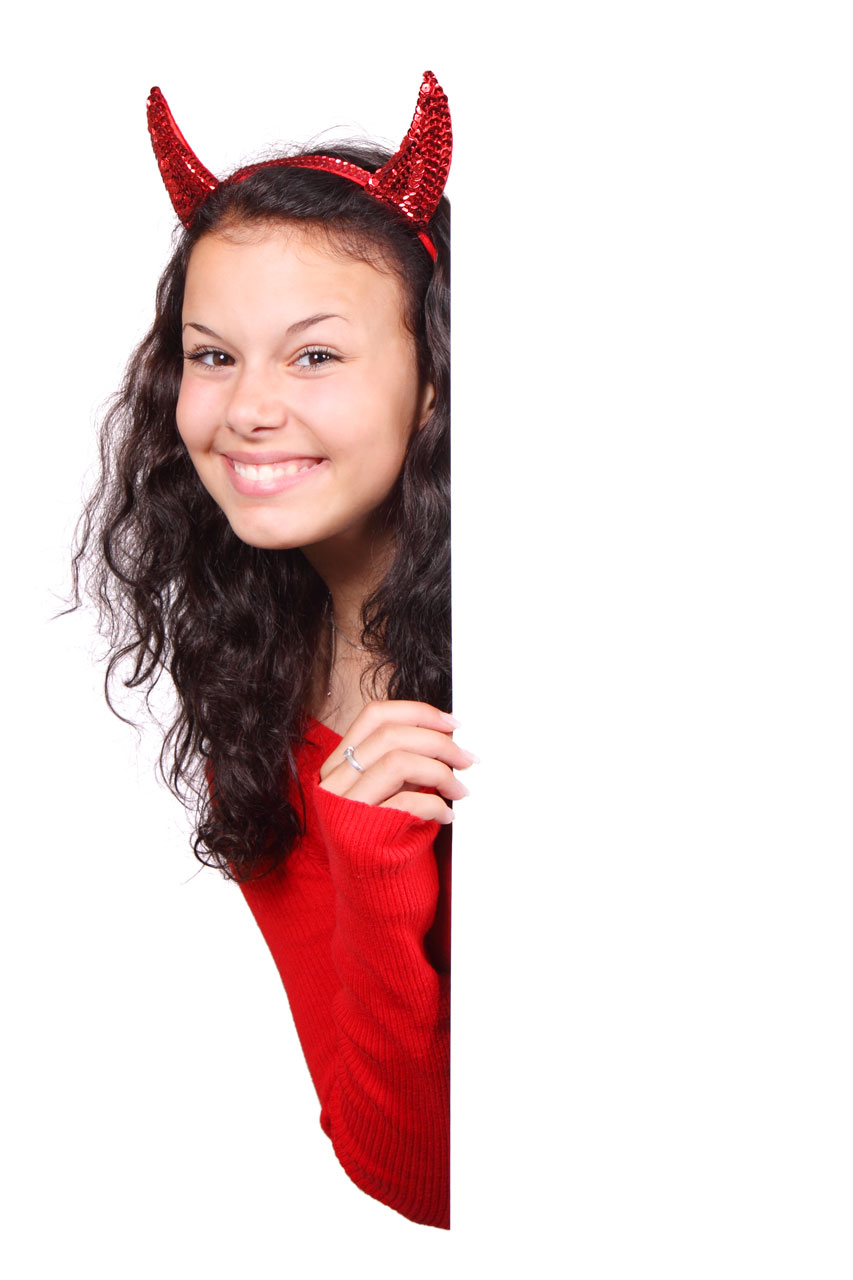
Halloween devil and board

Halloween devil behind white board.